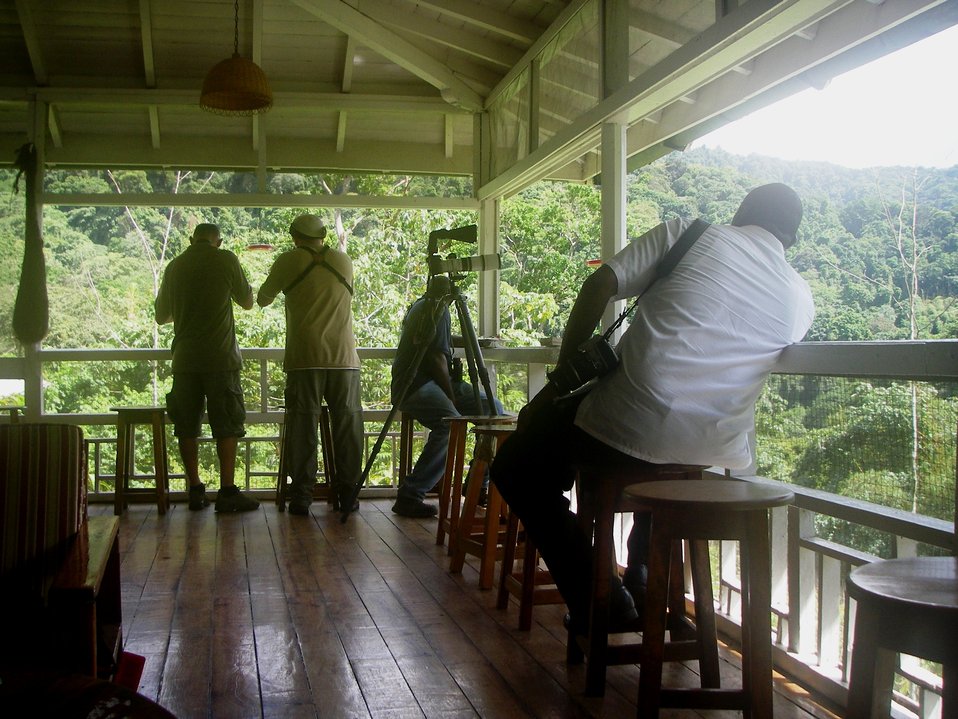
Inside visitor centre and lodge at Asa Wright Nature Centre, Trinidad